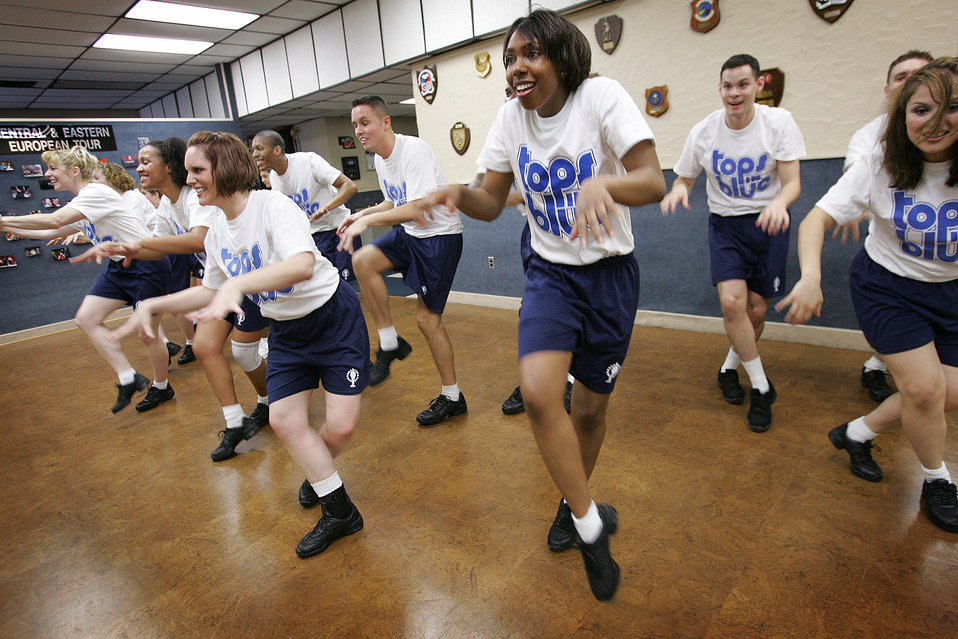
Tops in Blue performers perfect their routine

Tops in Blue 2007 cast members rehearse in their production center Feb. 7 at Lackland Air Force Base, Texas. This year's theme is